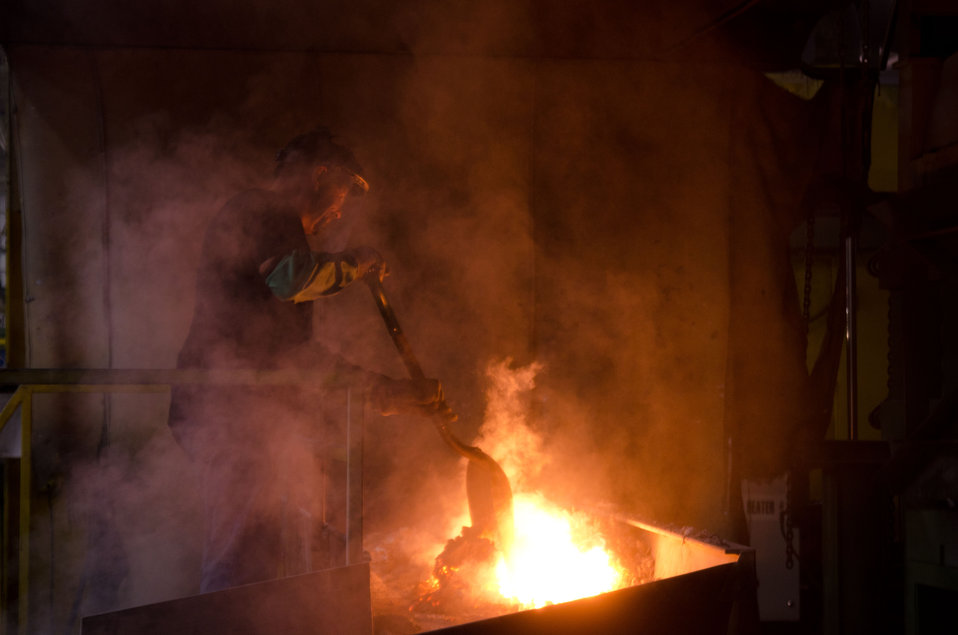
Melter operator Carl Welborn faces flames and intense heat to forklift foundry ingots into; and shovels slag out of a furnace crucible at Port City Group’s Port City Castings Corporation, manufacturer of high-pressure aluminum die-castings, mostly for the automotive industry, in Muskegon, MI, facility on Wednesday July 20, 2011. Port City Group boosted its employment by 12 percent over last year thanks to two Rural Business Guaranteed Loans totaling $9.6 million. In its 80,000 sq. ft. facility, machines that range from 800 – 1,600 tons, and cast A380 aluminum alloy products from melted ingots of aluminum, into automotive components of U.S.A. made vehicles. The process features a variety of robotic presses; computer controlled machining; quality control facility; and complete measurement and testing laboratory. In 2009 banks were backing out of loans for PCG equipment purchase agreements. The U.S. Department of Agriculture (USDA) loan guarantee helped make the loan possible with its guarantee. PCG obtained the needed robotic and other equipment. This resulted in a stable workforce that has since grown. When asked about their USDA experience, Port City Group Sales Manager Laura LaGuire said, “It was great! They were very helpful. Everything that came up was handled smoothly, the money came in place when it was needed, and it was a very smooth transition.”